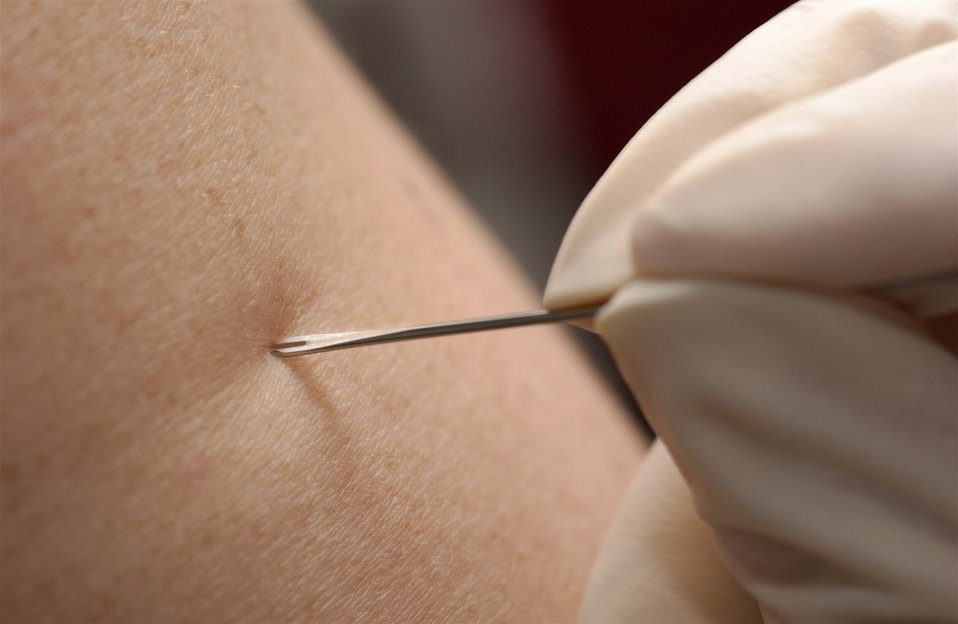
CDC Clinician demonstrates the use of a bifurcated needle during the 2002 Smallpox Vaccinator Workshop.